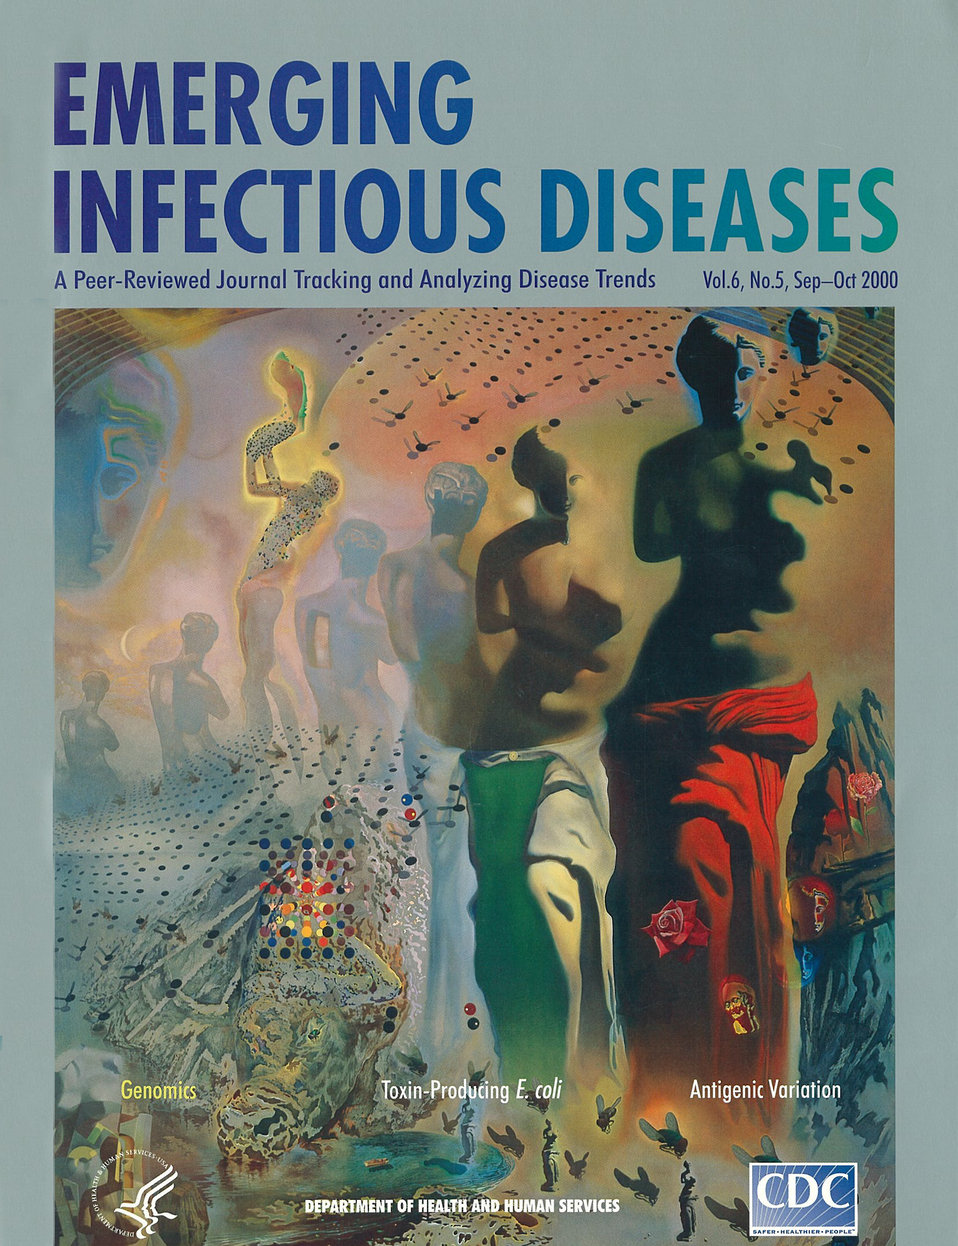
Emerging Infectious Diseases (EID) cover artwork for Volume 6, Number 5, September-October 2000 issue.